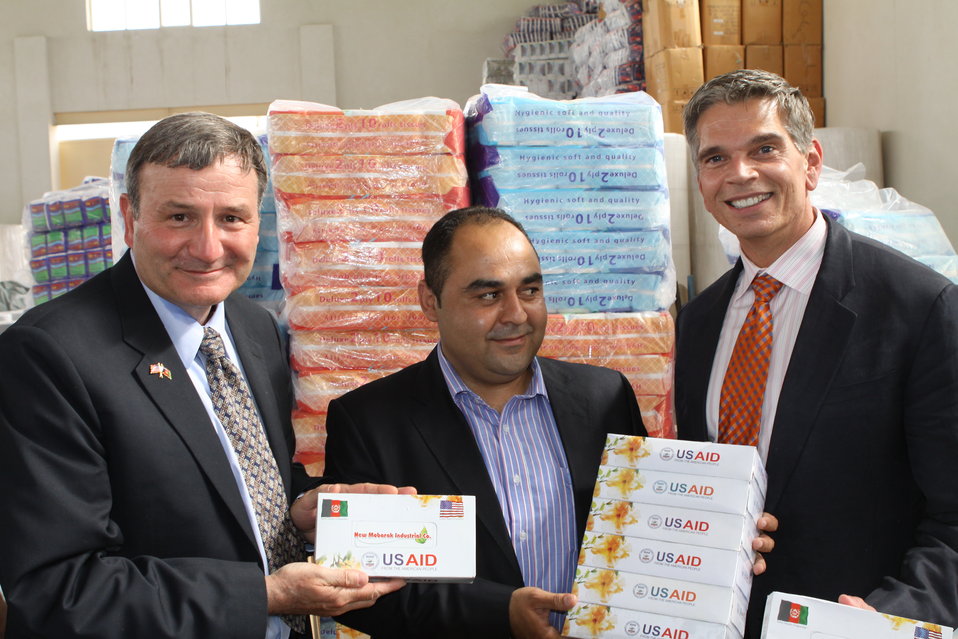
100525 Hirat Marble Conference 836